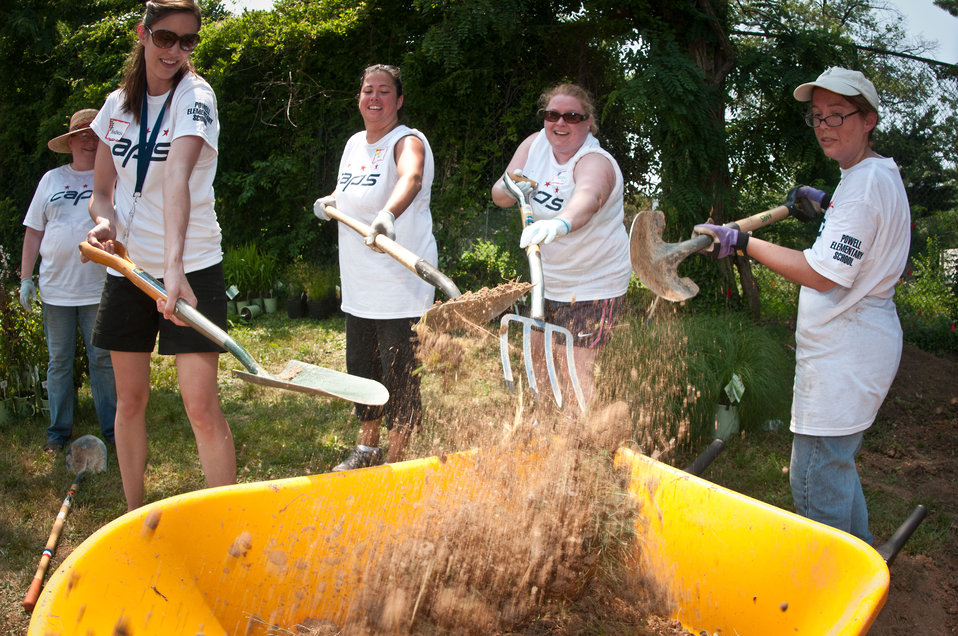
Washington Capitals “Caps” volunteers used teamwork to complete several projects during the first day of construction of a People’s Garden being constructed at the William B. Powell Elementary School, in Washington, DC, on Thursday, June 9, 2011. Volunteers from U.S. Department of Agriculture People’s Garden Executive Master Gardener program and Washington Capitals hockey organization, along with defenseman Jeff Schultz, and mascot Slapshot transformed a grassy corner of the school playground into a habitat garden and outdoor learning area. Executive Master Gardeners led the volunteer project teams. The Washington Capitals donated new tools; tool shed; garden materials; lunch; most of the volunteers and more. The completed projects included a walking path; tiling of garden plots; planting a bird habitat garden, pollinator garden and native grasses; caterpillar and butterfly plaques; hummingbird and bat house, and tool shed. The garden will later include a picnic area, outdoor classroom, hummingbird garden, Monarch watch garden, native bee garden, and birdbath. USDA challenges its employees to establish People's Gardens at USDA facilities worldwide or on this case, help communities create gardens. People's Gardens vary in size and type, but all have a common purpose - to help the community and the environment.